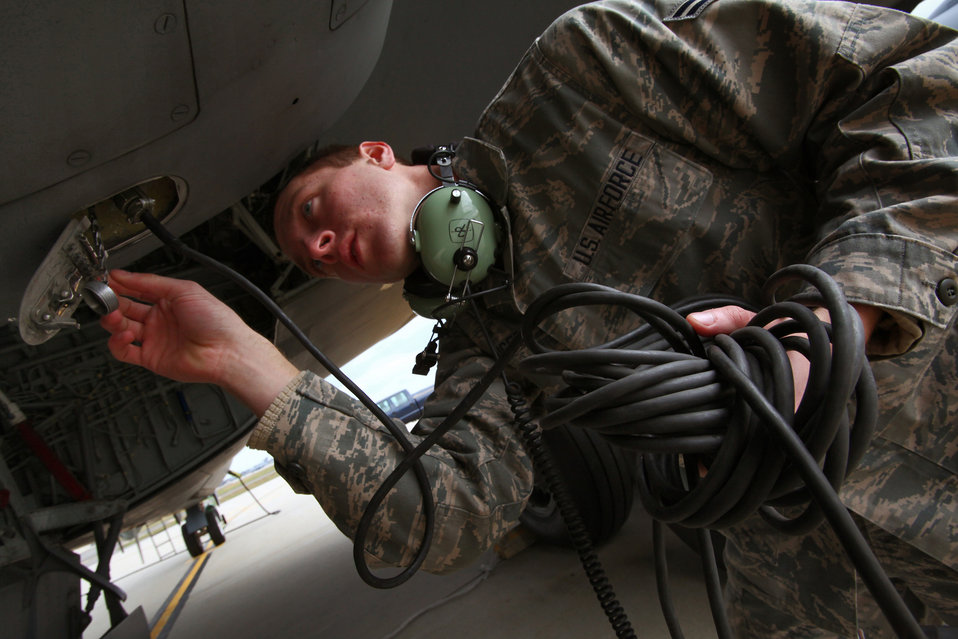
Aircraft maintenance

Airman 1st Class Jacob Kaiser conducts a pre-flight inspection on a KC-135R Stratotanker at Joint Base McGuire-Dix-Lakehurst, N.J., Nov. 18, 2012. Kaiser is a crew chief with the 108th Wing, New Jersey Air National Guard.